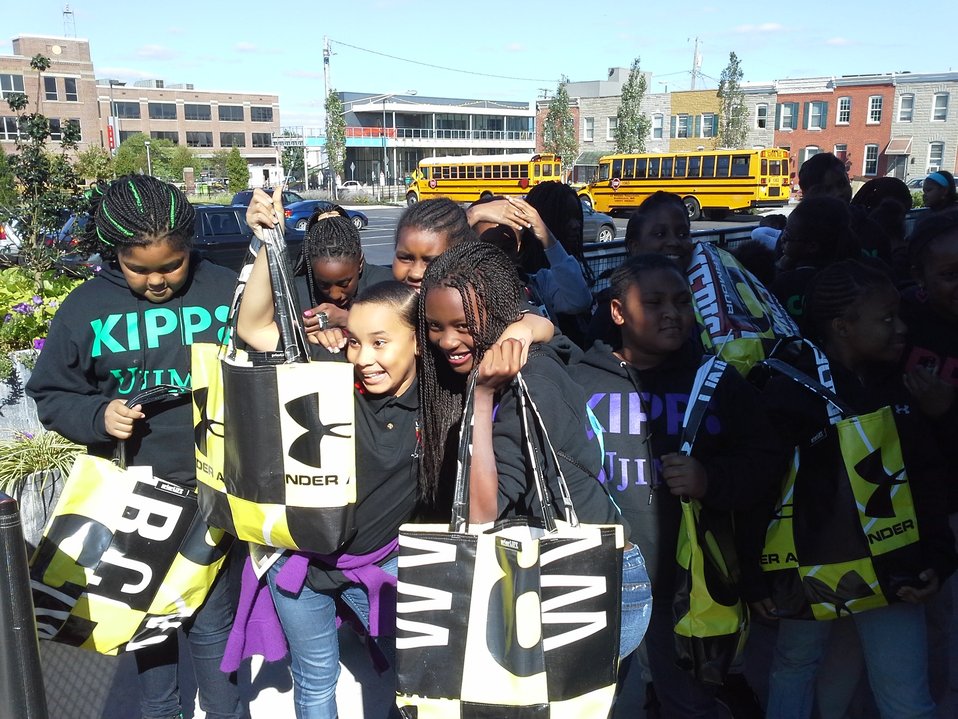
Sept 14 2013 Girls in STEM Summit

Director Dot Harris speaks to middle and high school girls in Baltimore at the Girls in STEM Summit this Sept.